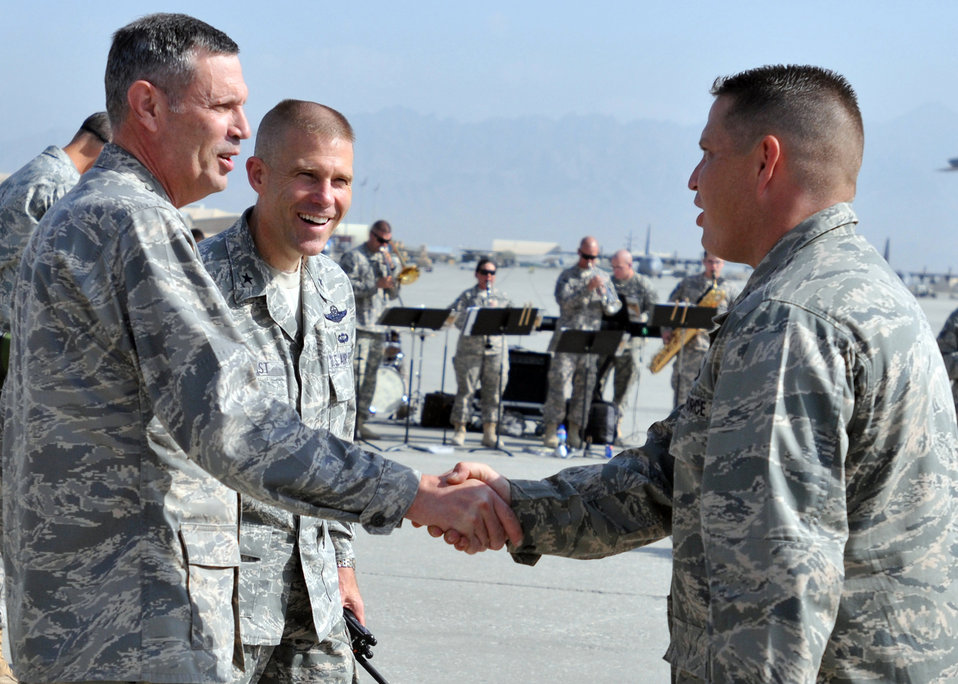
Warfighters take time for Air Force's 62nd birthday

Lt. Gen. John C. Koziol and Brig. Gen. Steven L. Kwast thank Capt. Michael Meek for his efforts in participating in the organization of the Air Force's 62nd birthday party Sept. 18, 2009, at Bagram Airfield, Afghanistan. General Koziol is the deputy undersecretary of Defense for intelligence for joint and coalition warfighter support and General Kwast is the 455th Air Expeditionary Wing commander. Captain Meek is a 455th AEW Protocol officer.